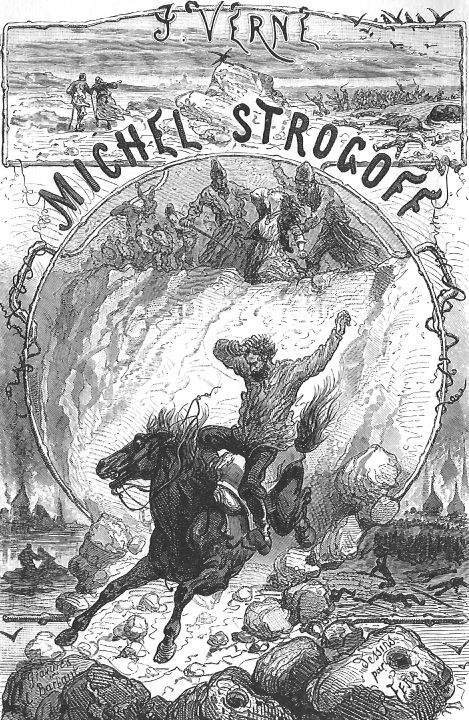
An illustration from the novel 'Michael Strogoff: The Courier of the Czar' by Jules Verne drawn by Jules F√©rat. Polski: Ilustracja powie≈õci Juliusza Verne'a 'Micha≈Ç Strogow, kurier carski' autorstwa Julesa F√©rata. ƒåe≈°tina: P≈Øvodn√≠ ilustrace Julese F√©rata k rom√°nu J. Verna 'Car≈Øv kur√Ωr'. Fran√ßais†: 'Michel Strogoff. Le courier du tzar', Jules F√©rat.